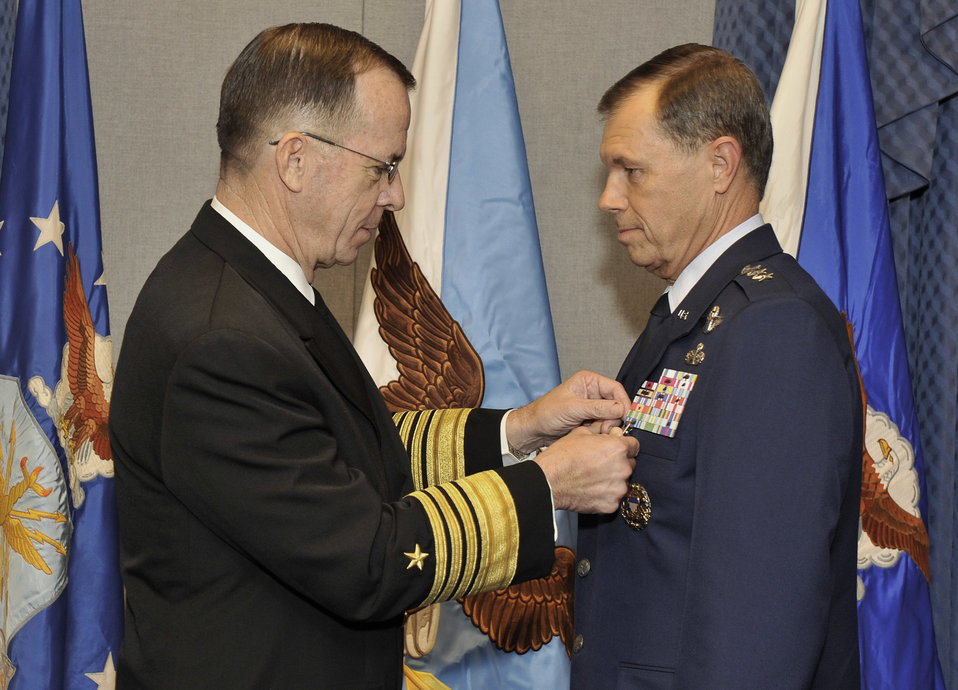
Air Force's newest general

Adm. Michael G. Mullen, chairman of the Joint Chiefs of Staff, presents the Defense Distinguished Service Medal to Gen. William Fraser during the general's promotion ceremony Oct. 8 in the Pentagon. General Fraser received his fourth star during the ceremony. Along with his recent selection as the Air Force vice chief of staff came the promotion to full general.